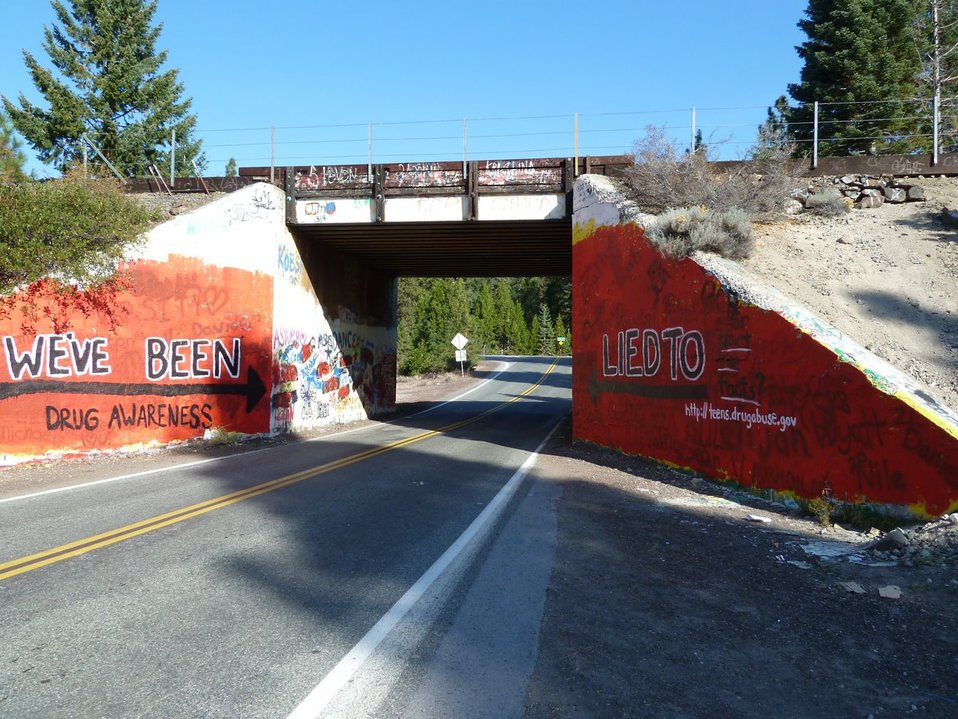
Siskiyou County, CA Drug Facts Week Photos

Students from the leadership class at Mt. Shasta High School painted this bridge to honor those who lost their lives to drug addiction. They also shatter the myths about drug and tobacco companies, and encourage teens to get the facts by visiting the NIDA website for teens.